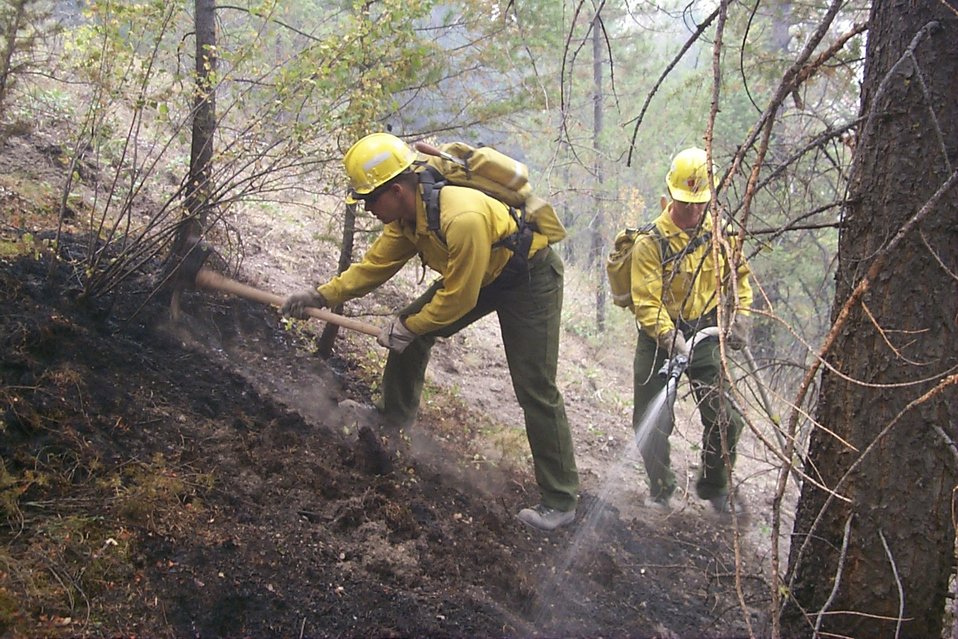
Line crew Fire Clearwater Fire Salmon Field Office USRD Upper Snake River District